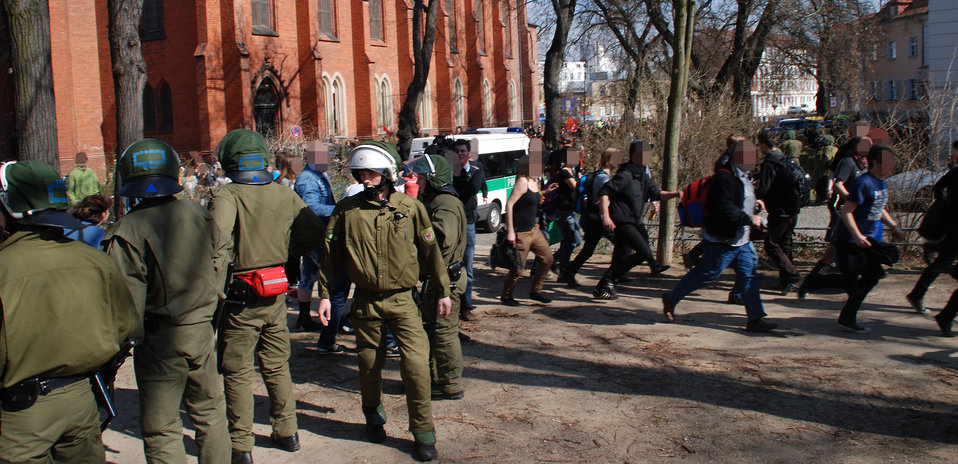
Proteste gegen den Nazi-Aufmarsch am 24.3.2012 in Frankfurt (Oder)